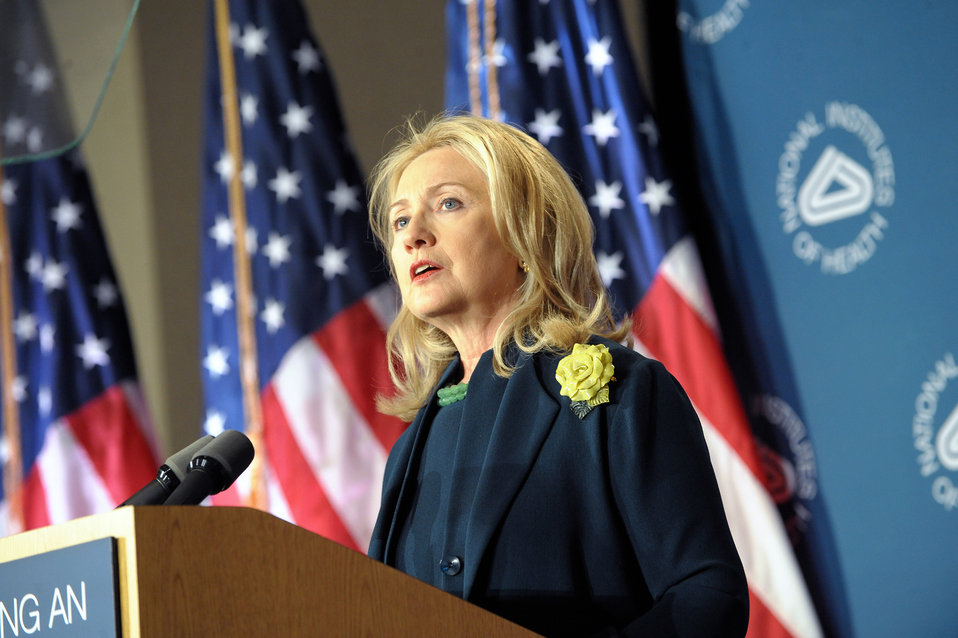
Secretary Clinton Delivers Remarks on the Future of the Global HIV/AIDS Epidemic

U.S. Secretary of State Hillary Rodham Clinton delivers remarks on the future of the global HIV/AIDS epidemic at the National Institutes of Health (NIH) in Washington, D.C., on November 8, 2011.